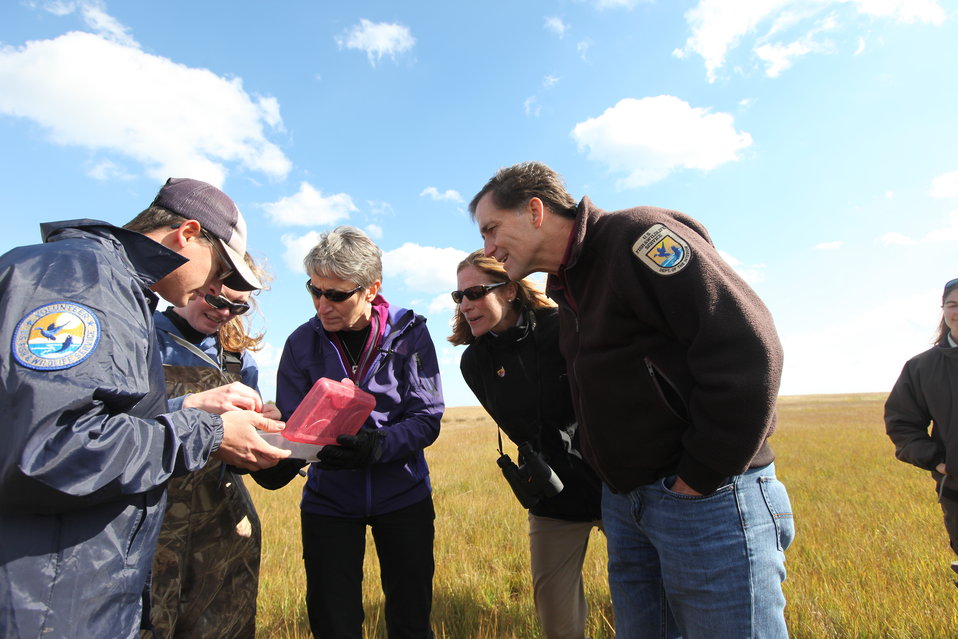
Nekton Sampling

Secretary Jewell, U.S. Fish and Wildlife Service Director Dan Ashe and Northeast Regional Director Wendi Weber checking out small fish and invertebrates sampled by interns and volunteers from the refuge marsh.